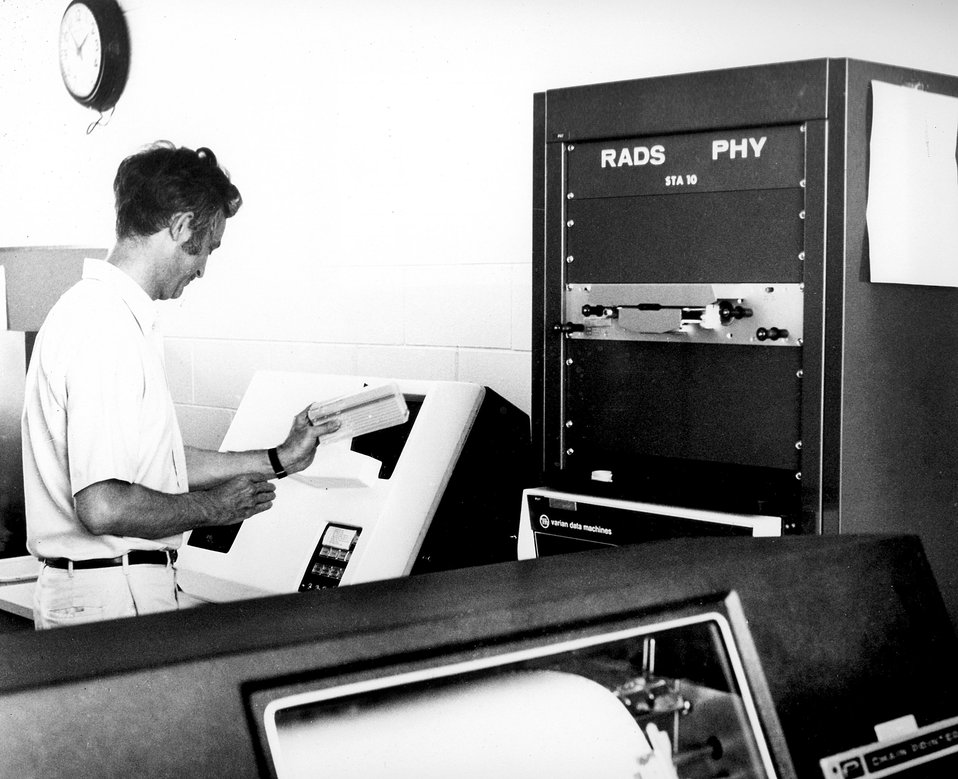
A physicist at Argonne loads punch cards into one of the remote computer terminals located throughout the Lab.
c.1970